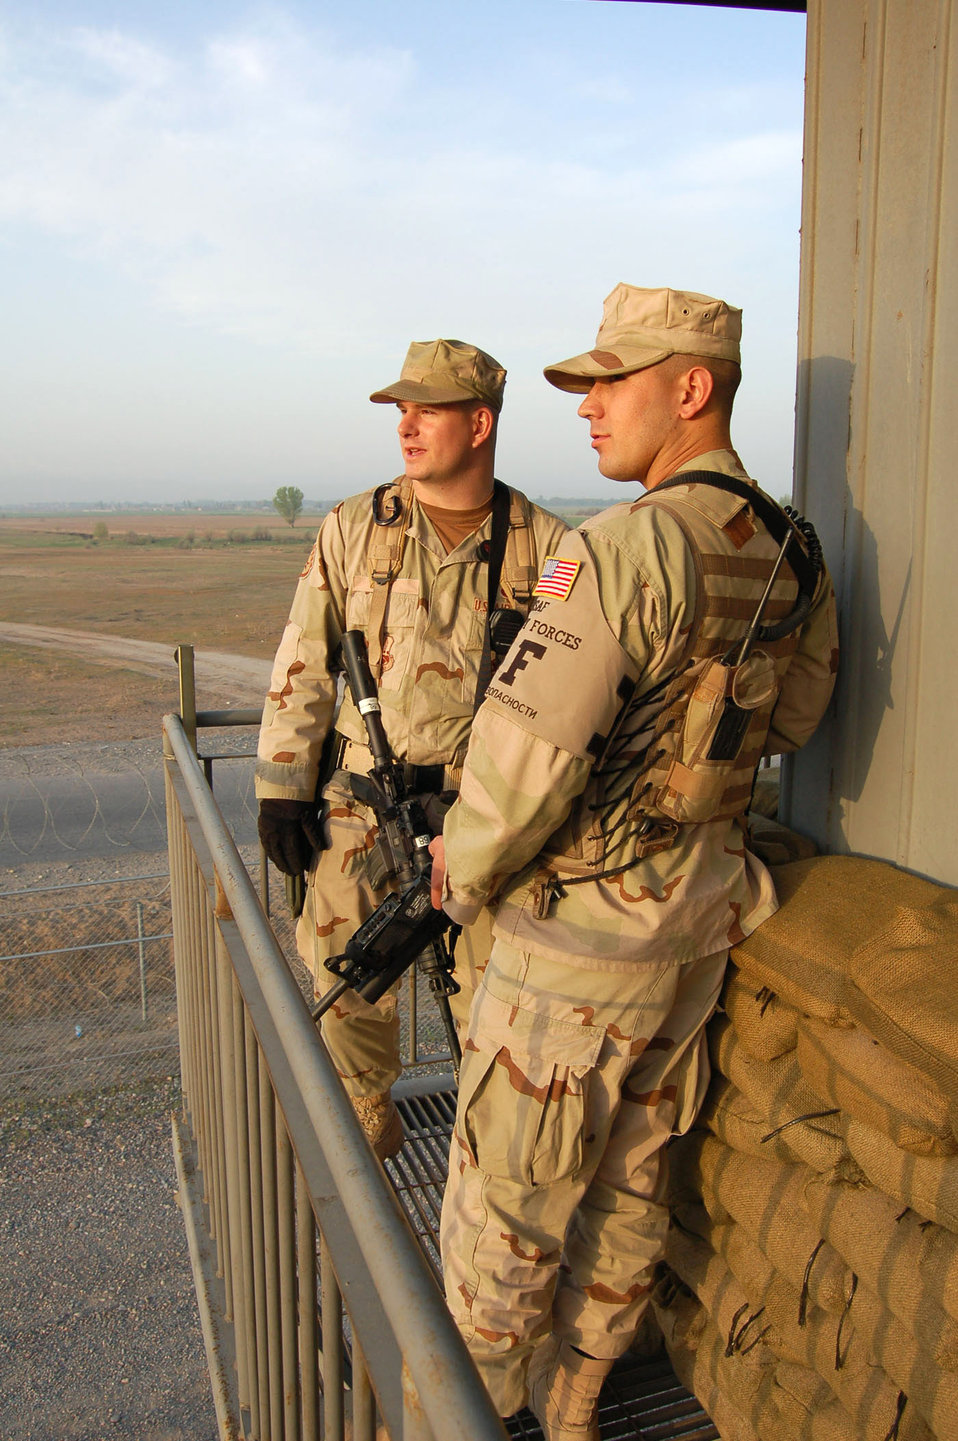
Security forces demonstrate skills

Staff Sgt. David Hoy and Senior Airman Jacob Medina survey the installation perimeter at Manas Air Base, Kyrgyzstan, on Wednesday, April 19, 2006. They are assigned to the 376th Expeditionary Security Forces Squadron.